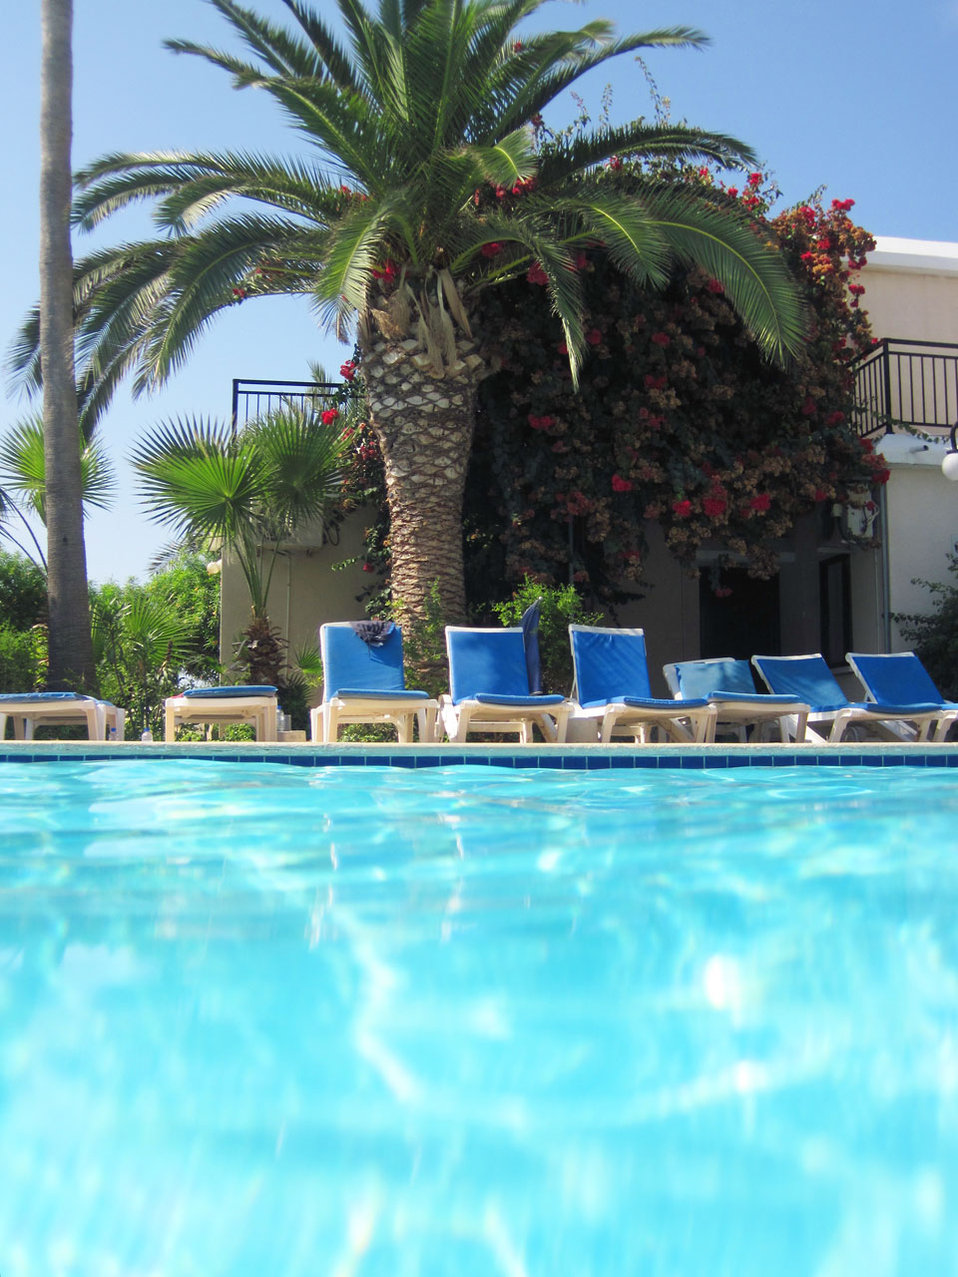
Sunbed pool and palm tree in front of hotel.